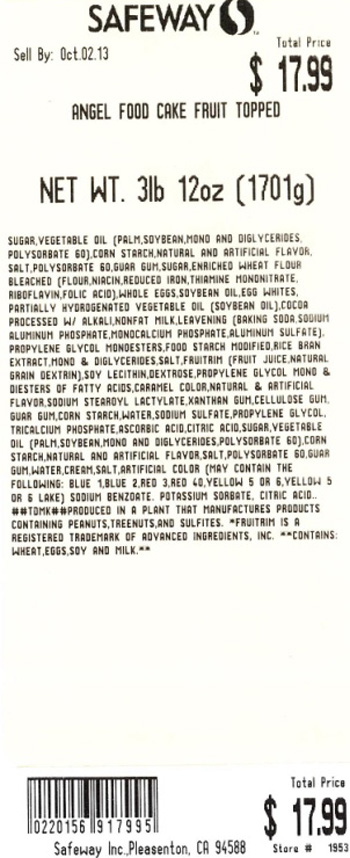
RECALLED – Angel Food CakesAngel Food Cake Recall FDA.pdf

September 26, 2013 – Product Recall – Safeway Recalls Several Varieties of Angel Food Cake Due to Undeclared Soy and Milk Allergens.